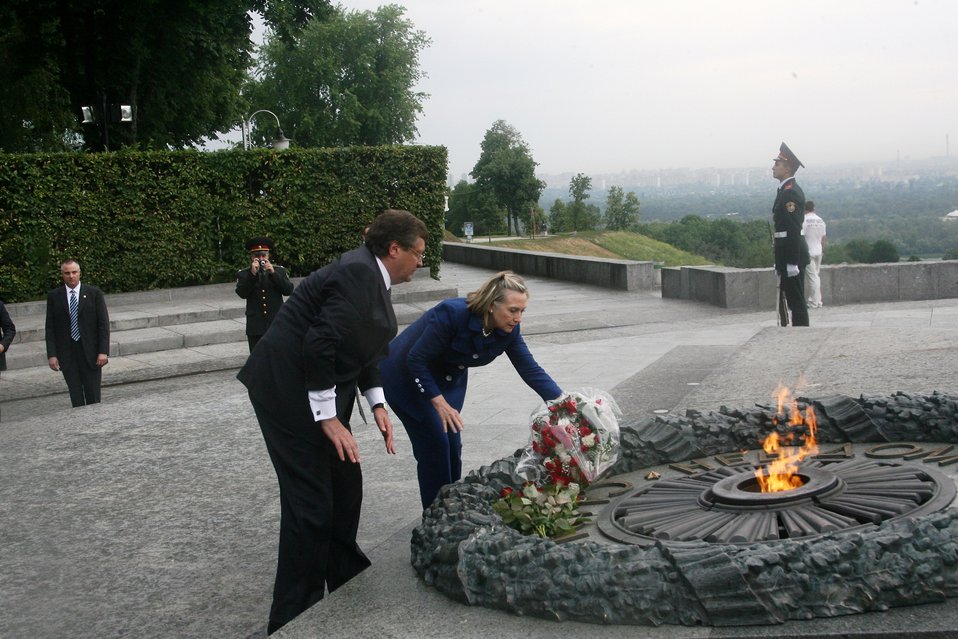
Secretary Clinton and Ukrainian Foreign Minister Visit Tomb of the Unknown Soldier

U.S. Secretary of State Hillary Rodham Clinton and Ukrainian Foreign Minister Kostyantyn Gryshchenko place flowers at the Tomb of the Unknown Soldier in Kyiv, Ukraine, on July 2, 2010.